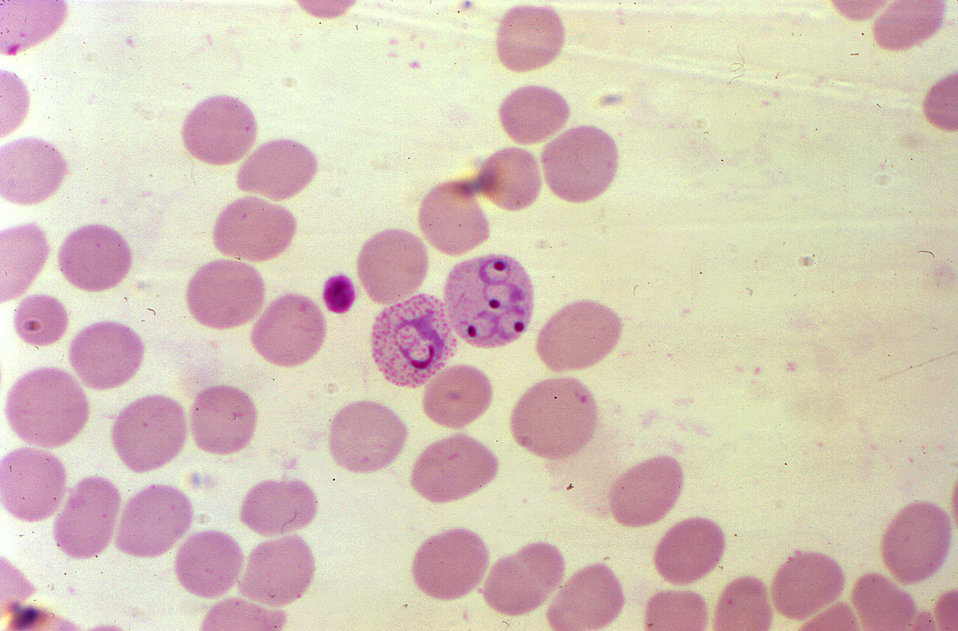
Magnified 1000X, this photomicrograph depicts a red blood cell containing four Plasmodium vivax rings, next to a growing trophozoite.